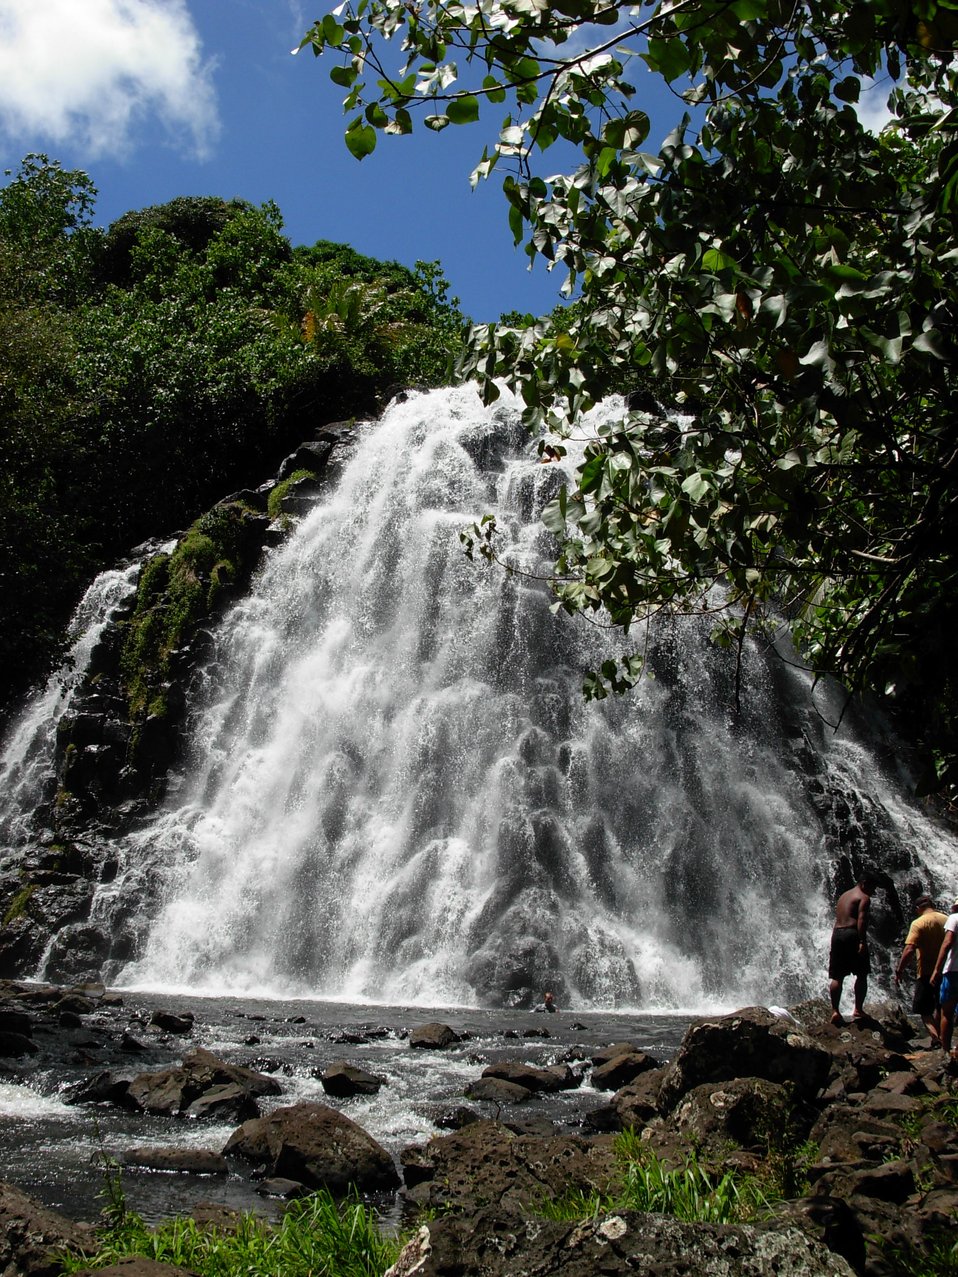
Keprohi (also spelled Kepirohi) Waterfall